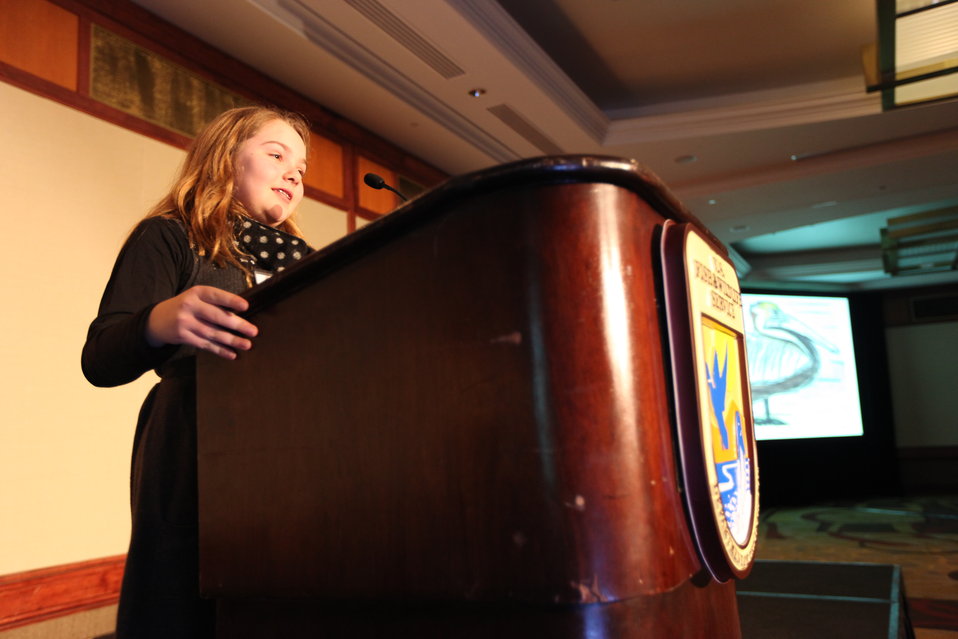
Olivia Bouler, Save the Gulf: Olivia's Birds

Eleven-year old Olivia Bouler, creator of Save the Gulf: Olivia's Birds, speaking at the Northeast Region Biologists Conference. Olivia raised $200,000 for oil spill recovery through her artwork.